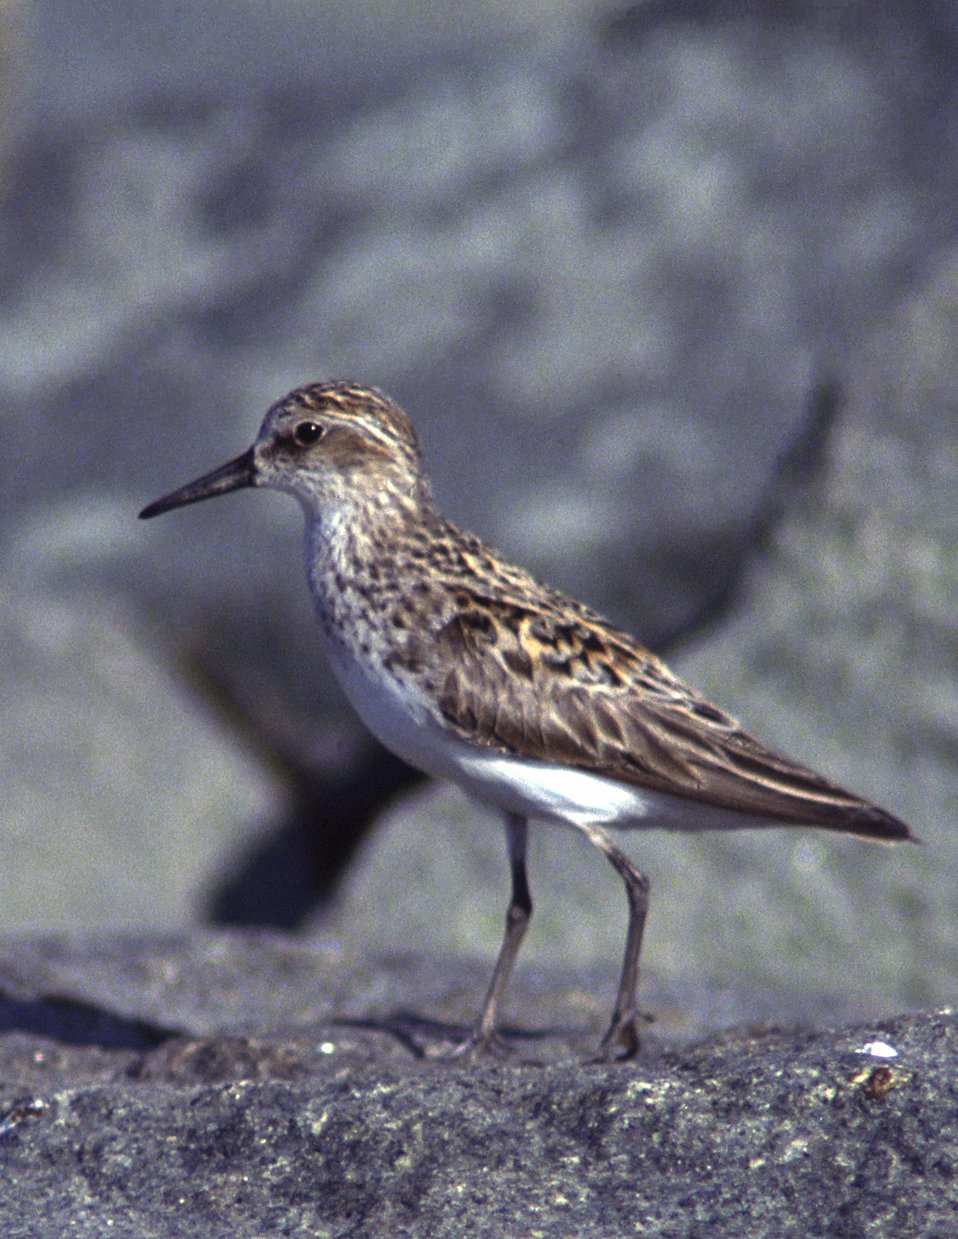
Sandpiper

Pt. Mahon, DE.